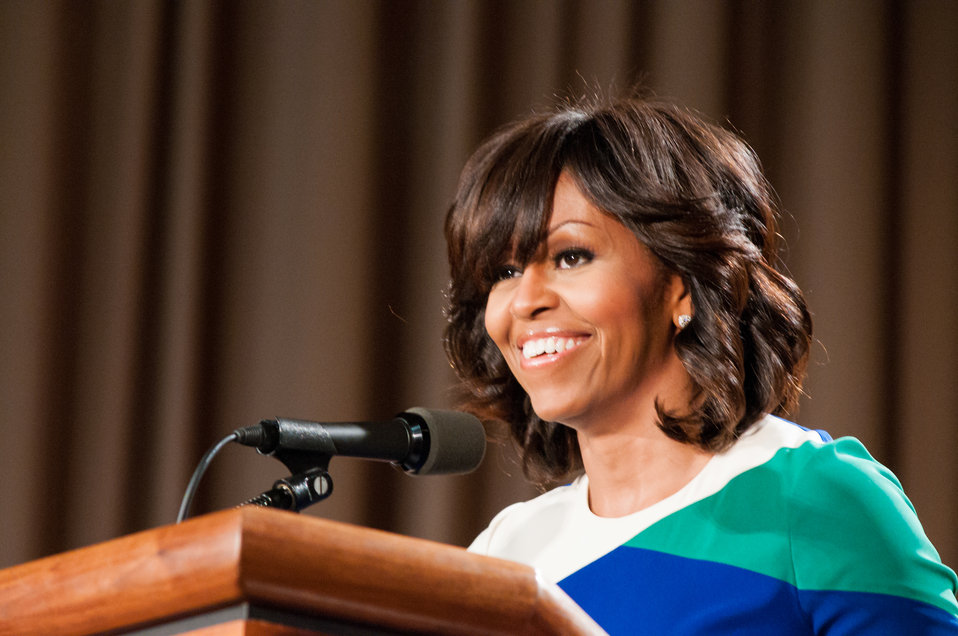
First Lady Michelle Obama thanks U.S. Department of Agriculture (USDA) employees for their service and dedication at the Jefferson Auditorium, USDA on Friday, May 3, 2013. The First Lady reminded federal workers of the importance of the work they do to support American farmers and ranchers, protecting the environment, lifting up rural communities, and keeping food safe, and working to end hunger.